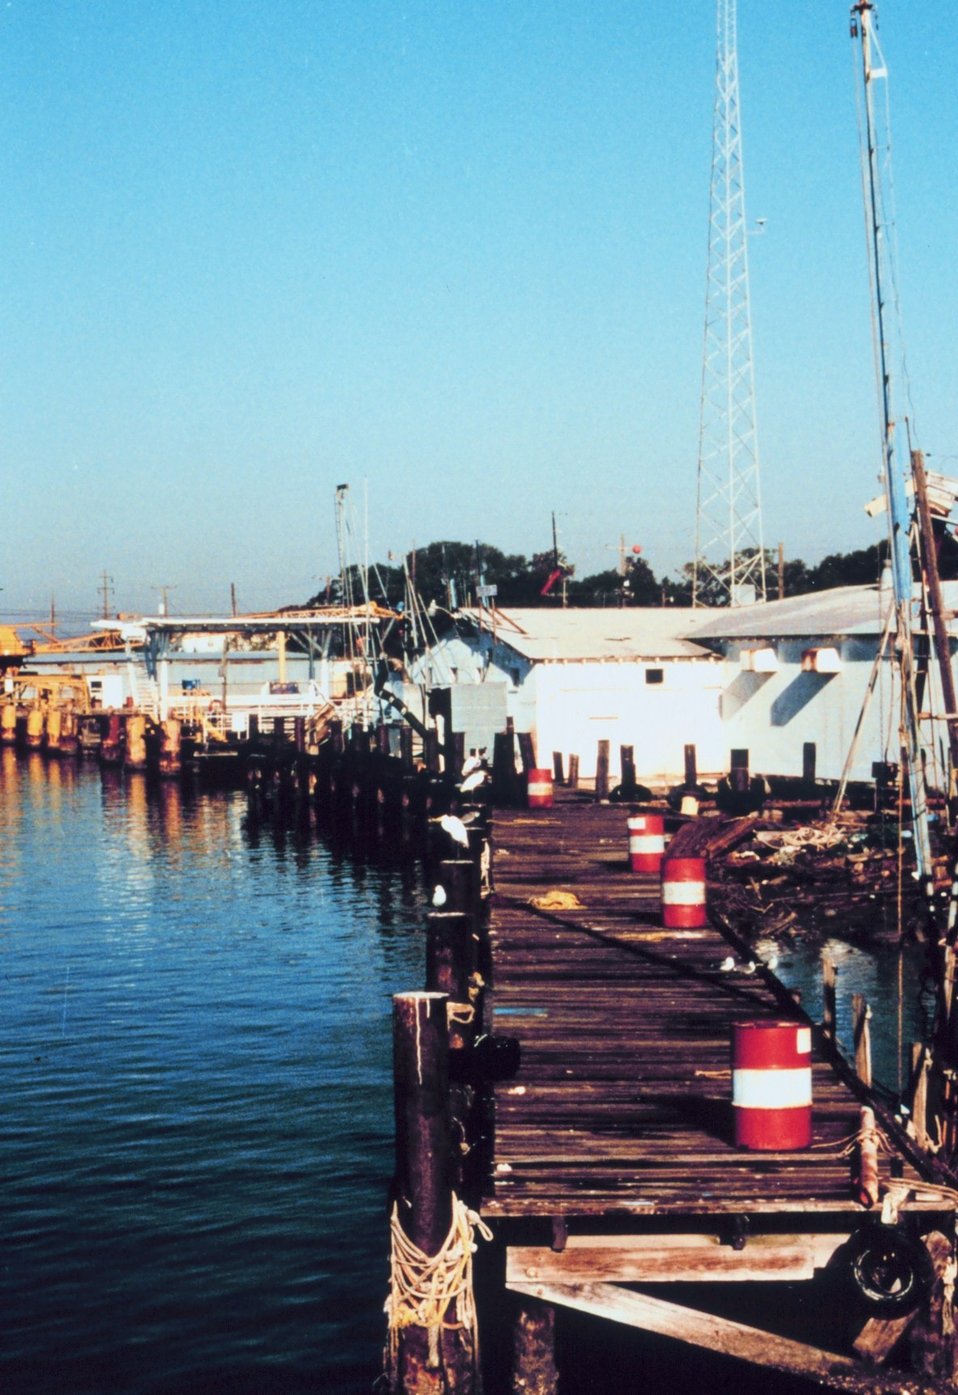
The NOAA Ship RUDE's berthing pier at Cameron